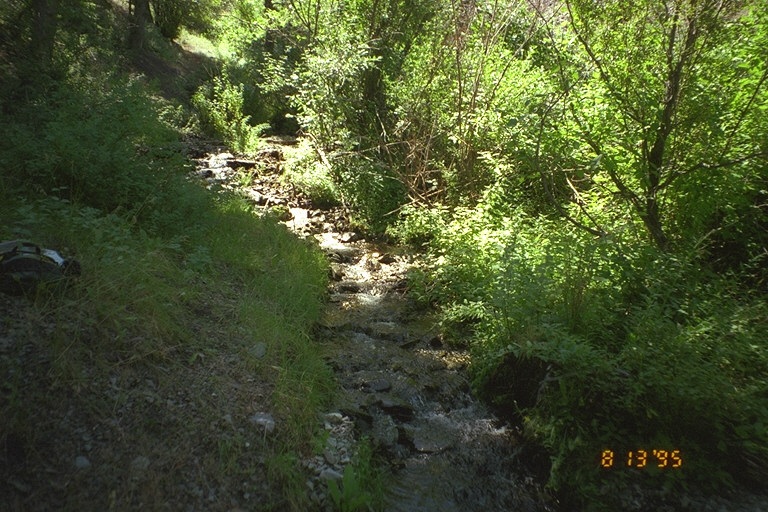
Riparian area Public Lands Salmon Field Office UCSC Upper Columbia Salmon Clearwater District